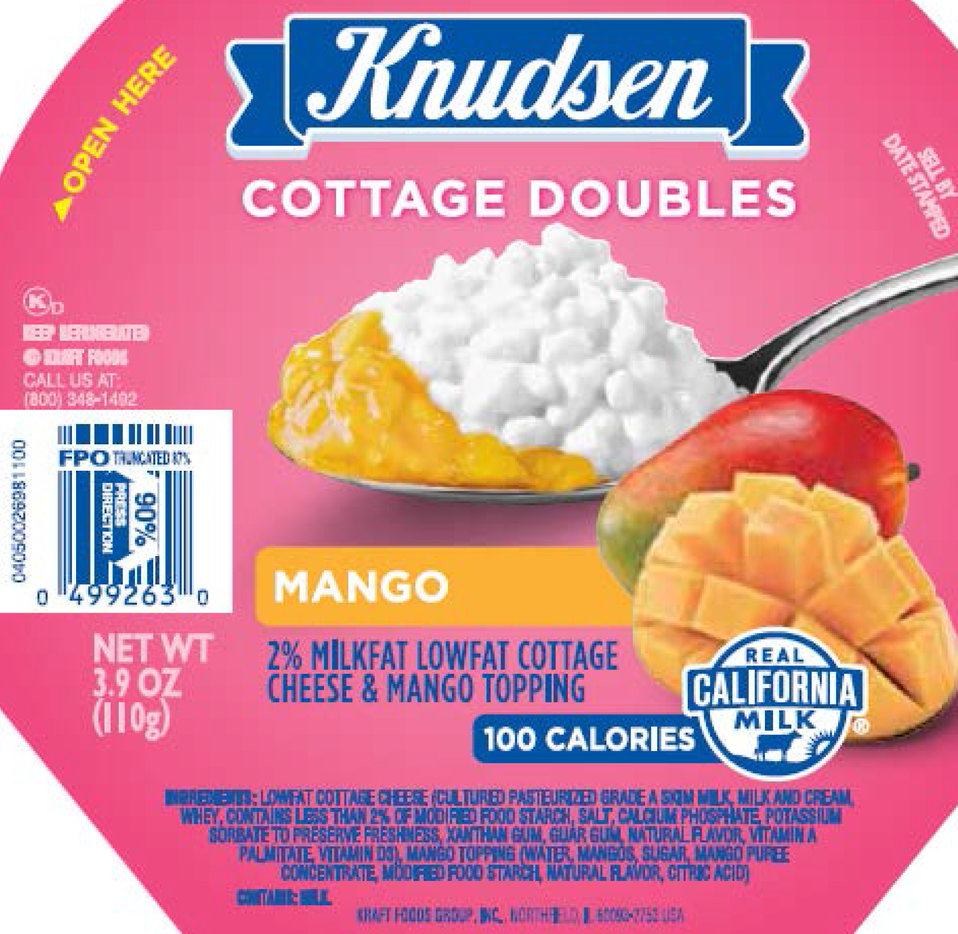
RECALLED – Cottage Cheese products

May 17, 2014 – Product Recall – Kraft Foods Group Voluntarily Recalls Select Cottage Cheese Products Due to Out-of-Standard Storage Temperatures
Certain Knudsen Cottage Cheese, Breakstone’s Cottage Cheese, Simply Kraft Cottage Cheese and Daily Chef Cottage Cheese Products Included in the Recall
.